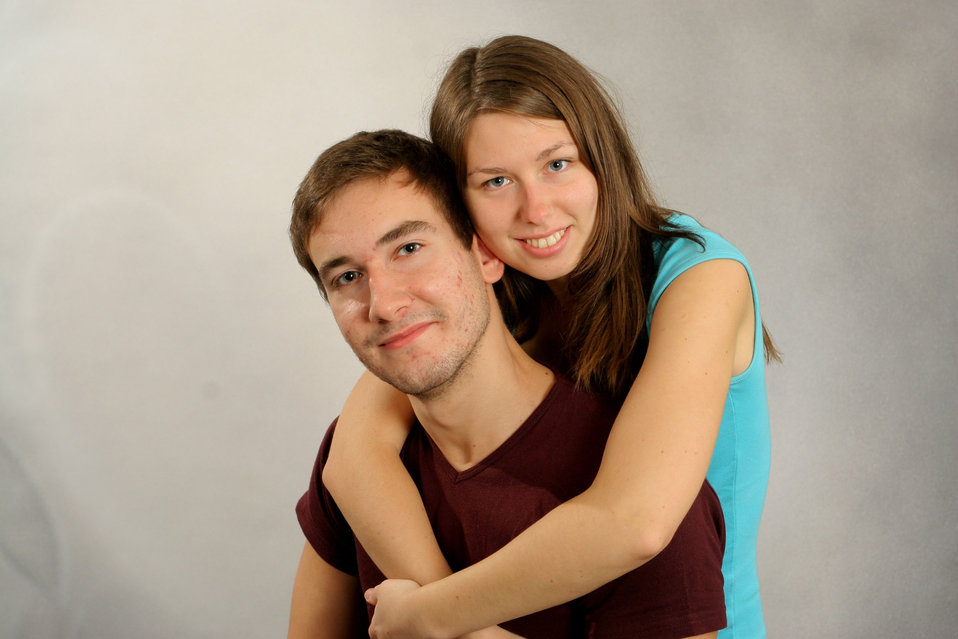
John and eve salon.